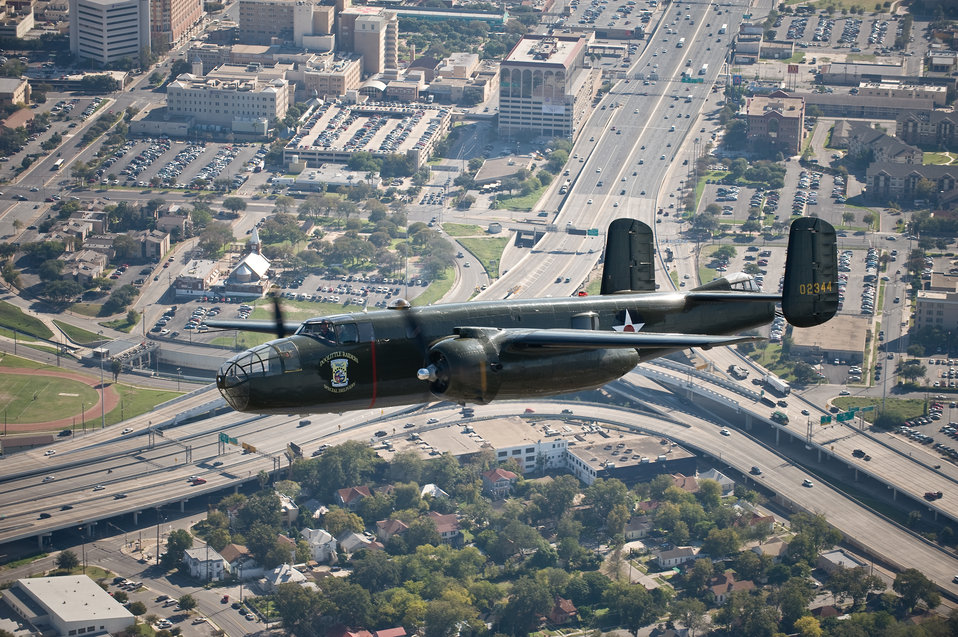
Warrior Flight